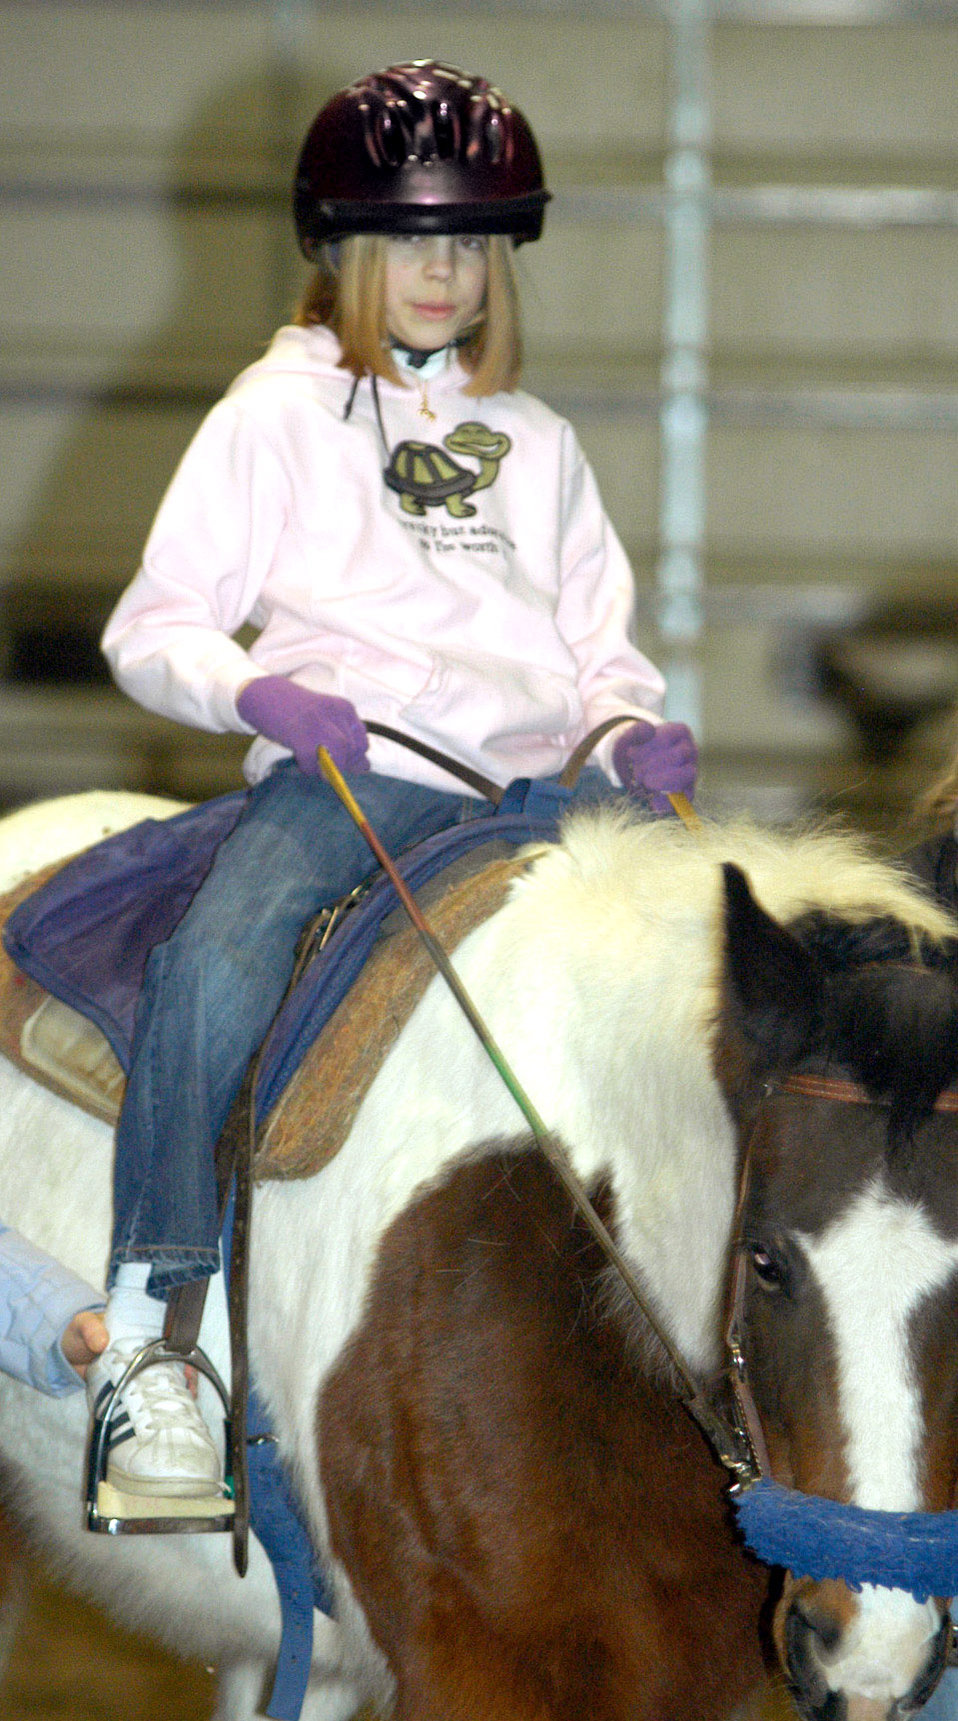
Creative therapy, fighting spirit help one child 'rise up'

Erin Pelton, age 13, rides a horse during a weekly therapy session at Pikes Peak Therapeutic Riding Center in Colorado Springs, Colo. Erin has dystonic cerebral palsy, a neurological disorder. The therapy helps encourage independence and has helped Erin walk, as her left foot tends to roll inward and her right foot drags.